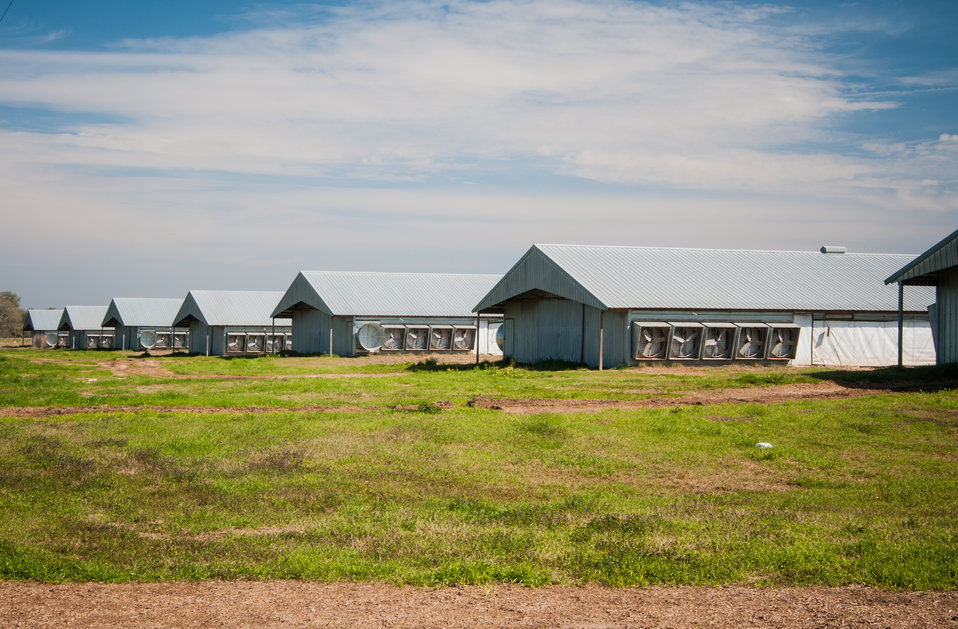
AKC Poultry houses bask in the sun in Arlington, GA on Mar. 7, 2013. AKC has eight chicken houses with approximately 20,000 birds per house. That is 160,000 birds, which translates into tons of litter. AKC was able to address their nutrient management and water quality concerns with a Stackhouse to better manage poultry litter through a U.S. Department of Agriculture (USDA) Natural Resources Conservation Service (NRCS) Environmental Quality Incentives Program (EQIP) contact. Stackhouses get the poultry litter off the ground so it will not contaminate water. The USDA Strike Force Initiative has designated Baker County, GA as a Strike Force county selected to receive assistance to relieve persistent poverty in historically high-poverty counties.